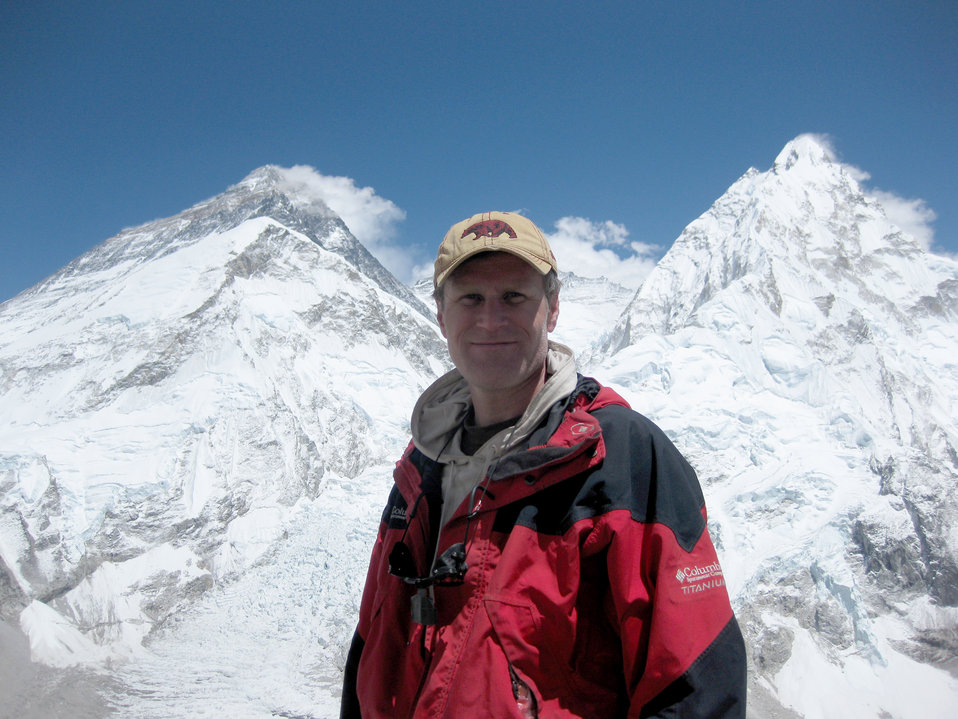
Airman scales Mount Everest

Lt. Col. Peter Solie acclimates while standing at Mount Pumori Advanced Base Camp with the Mount Everest summit pyramid over his left shoulder May 17, 2010, in Nepal. Colonel Solie reached the summit May 17. Colonel Solie is the Air Force Space Command Space Safety Division chief.